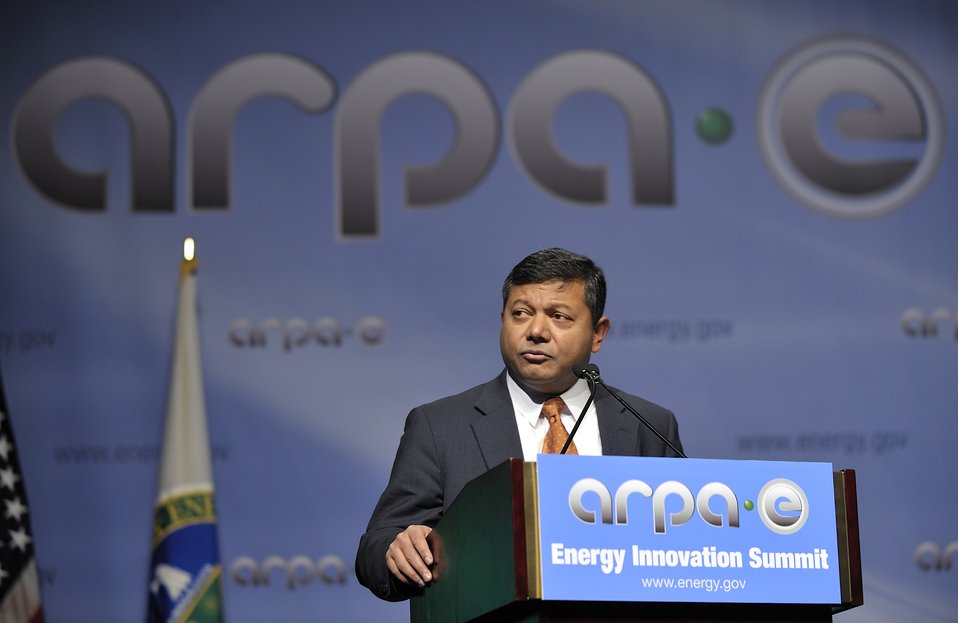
ARPA-E Energy Innovation Summit 2011, 39 of 83

Dr. Arun Majumdar, Director, ARPA-E.